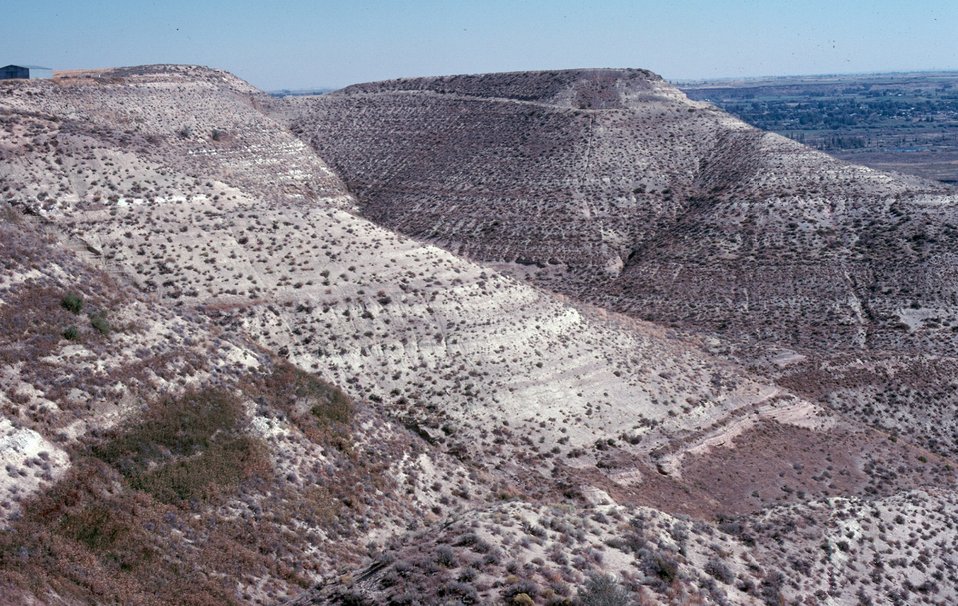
Hagerman Jarbridge Field Office LSRD Lower Snake River District